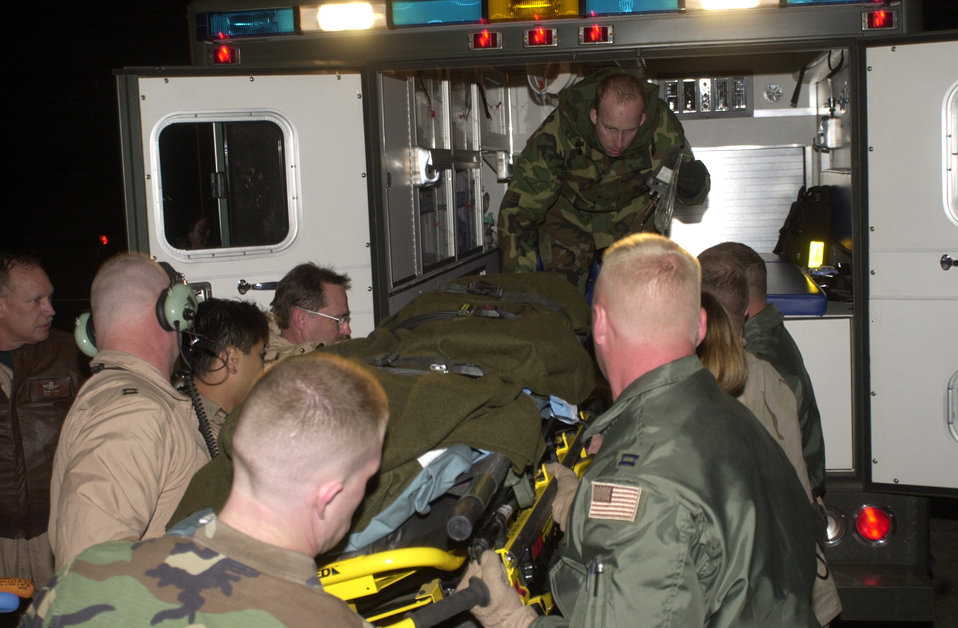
Lynch return

RAMSTEIN AIR BASE, Germany -- Army Private 1st Class Jessica Lynch is moved to an ambulance April 2 on her return from Iraq. Lynch was the first prisoner of war to be rescued in Operation Iraqi Freedom.